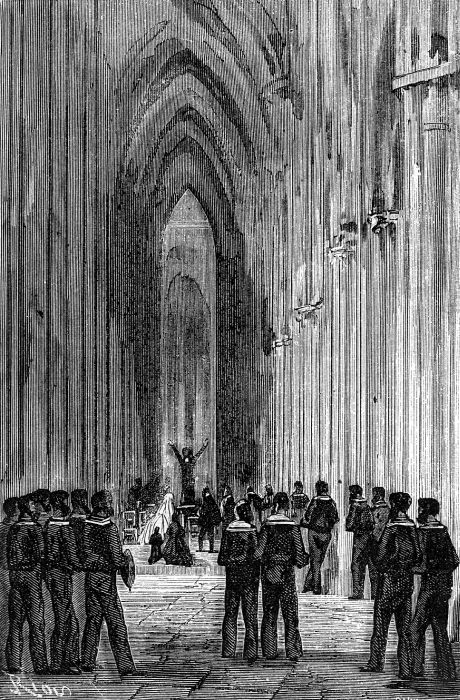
An ilustration from the novel 'In Search of the Castaways; or Captain Grant's Children' by Jules Verne drawn by Édouard Riou. Polski: Ilustracja powieści Juliusza Verne'a 'Dzieci kapitana Granta' autorstwa Édouarda Riou. Français : 'Les Enfants du capitaine Grant', Édouard Riou. Français : Là, le révérend Morton implora les bénédictions du ciel.